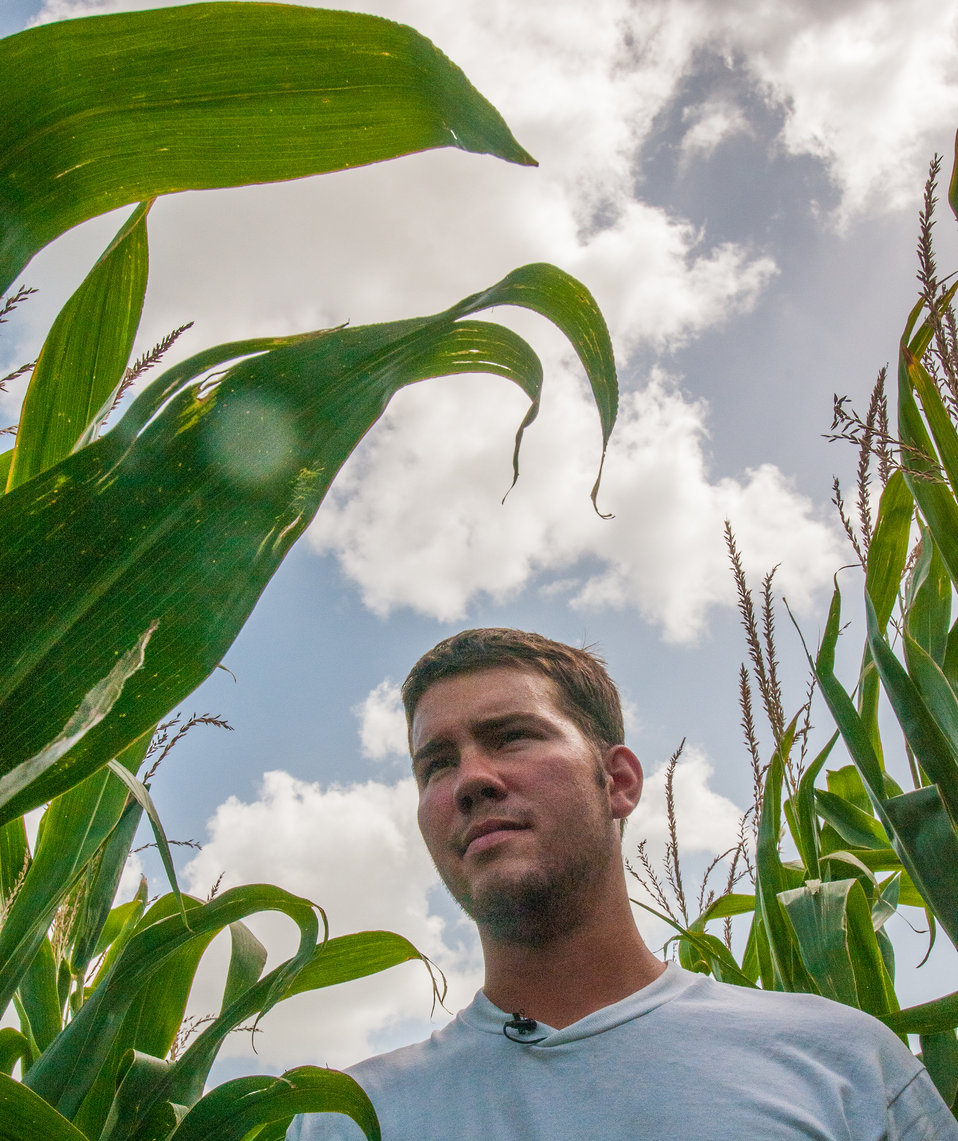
Philip Marek checks the health of a crop of #2 yellow corn at his father's farm in Wharton County, TX on Jun. 20, 2013. Philip Marek has been a farm owner since 2010 and started with 210 acres. Marek and his cousin Josh Marek were able to use a U.S. Department of Agriculture (USDA) Farm Services Agency (FSA) small and new farmer and rancher loan programs provided them the ability to handle initial business start-up and equipment purchase.